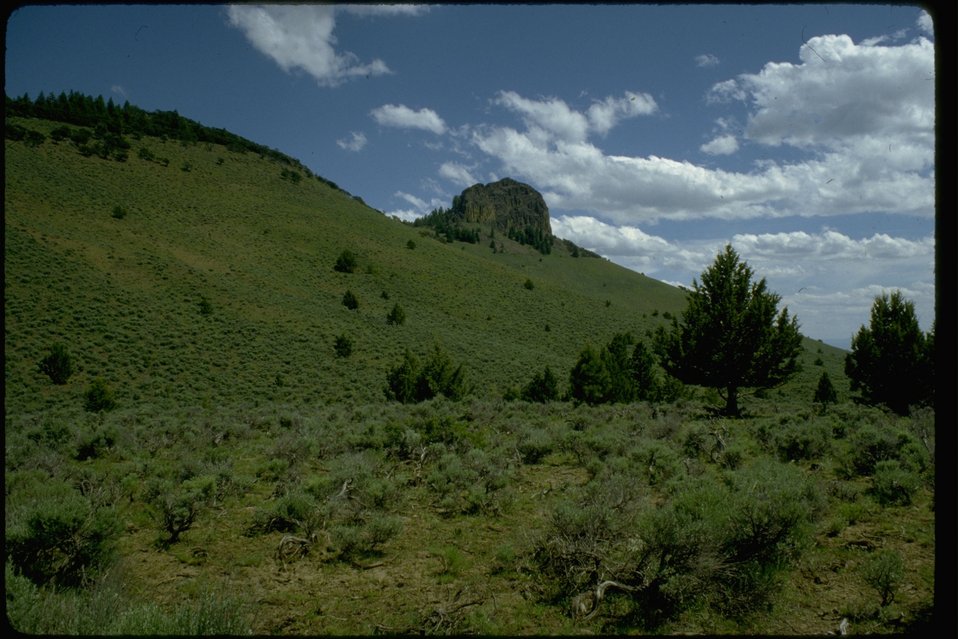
View of the west side of the ridge on Castle Rock. WSA OR 3-18.